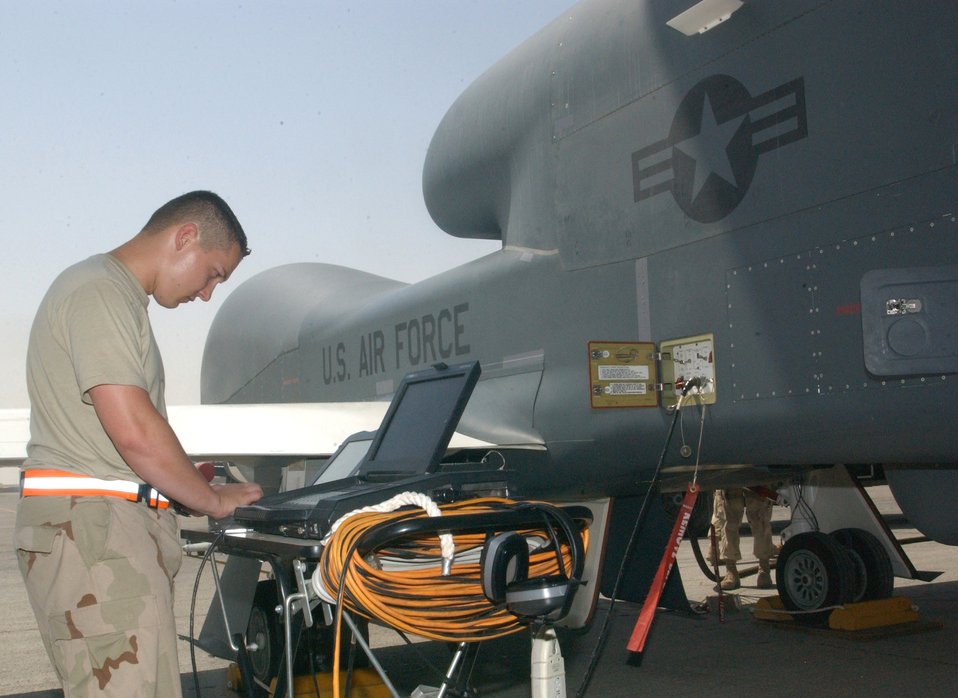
Global Hawk, global mission

Senior Airman Gordon Casselman checks the digital maintenance logs on a Global Hawk unmanned aerial vehicle following a mission Oct. 3 at a deployed location in Southwest Asia. The Global Hawk can survey large geographic areas with pinpoint accuracy to give military decision-makers the most current information about enemy locations, resources and members. Airman Casselman is assigned to the 380th Expeditionary Maintenance Group.